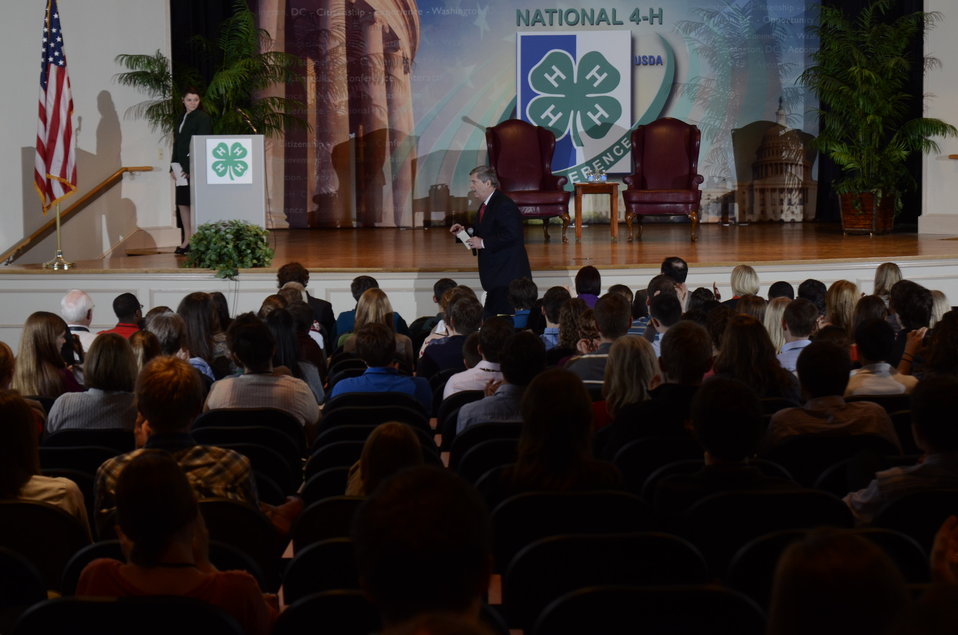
Agriculture Secretary Tom Vilsack speaks with 4-H members at the National 4-H Youth Center in Chevy Chase, MD, on Monday, March 26, 2012. 'For almost 100 years, USDA and 4-H have partnered to produce some of our nation's best and brightest, including farmers and ranchers who have supported the American economy and put food on our tables,' Vilsack said. 'You all are tomorrow's leaders. We need you to think big, innovate and help tackle the important challenges standing between us, a stronger middle class and a stronger nation.'